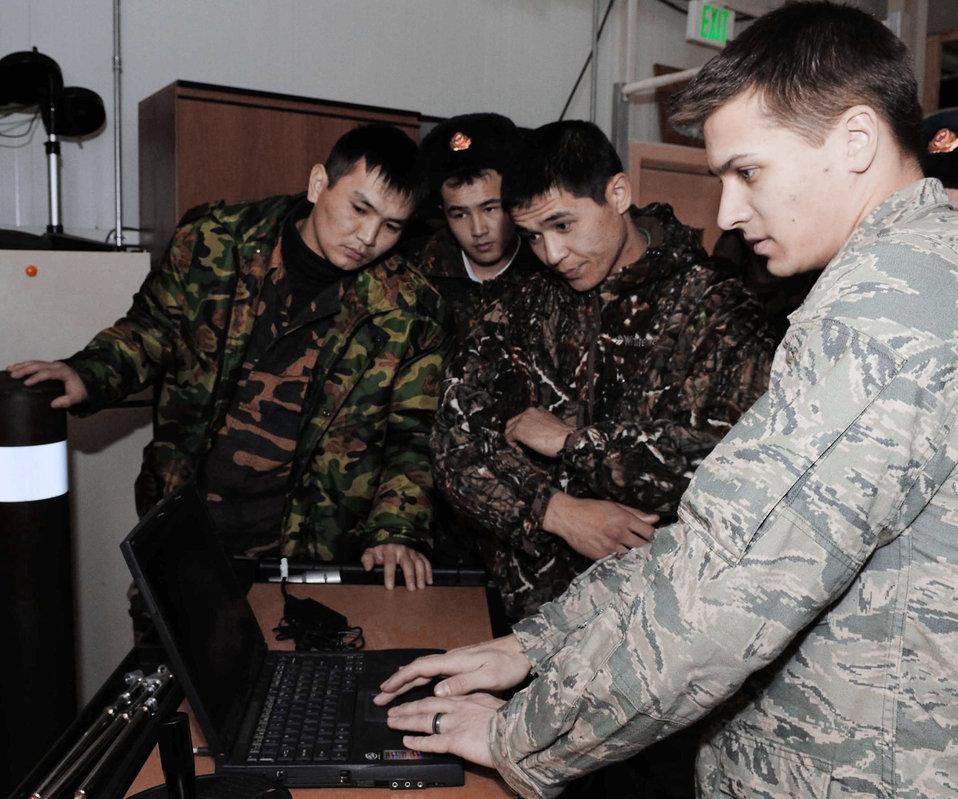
Joint EOD training benefits 2 nations

Staff Sgt. Joseph Hamski shows Kyrgyz army explosive ordnance disposal technicians how a computer system works with an X-ray machine to see inside packages during a subject matter information exchange March 16, 2010, at the Transit Center at Manas, Kyrgyzstan. Sergeant Hamski is a 376th Expeditionary Civil Engineer Squadron EOD technician.